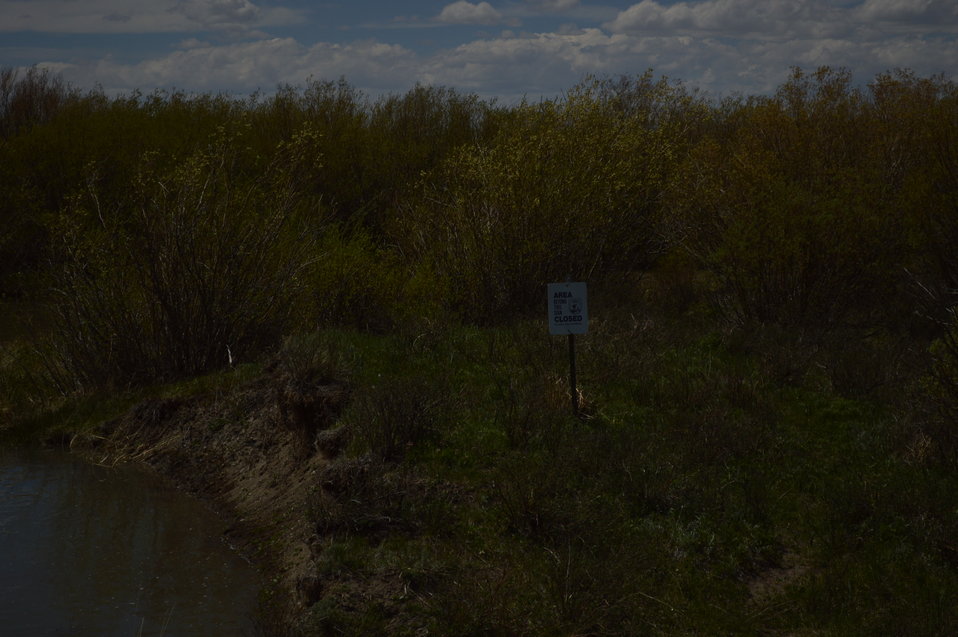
Regional Leadership Visit to Montana 2014